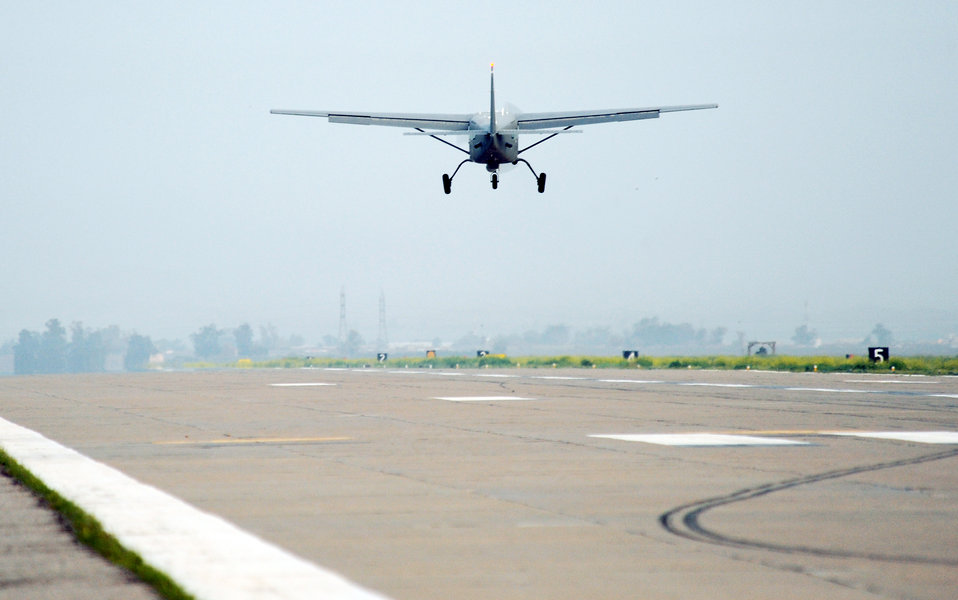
All-Iraqi effort during historic election

Iraqi air force Squadron 3 launches six of their aircraft March 5, 2010, from Kirkuk Regional Air Base, Iraq. This launch was a surge flight operation in support of the national Iraqi elections March 7.